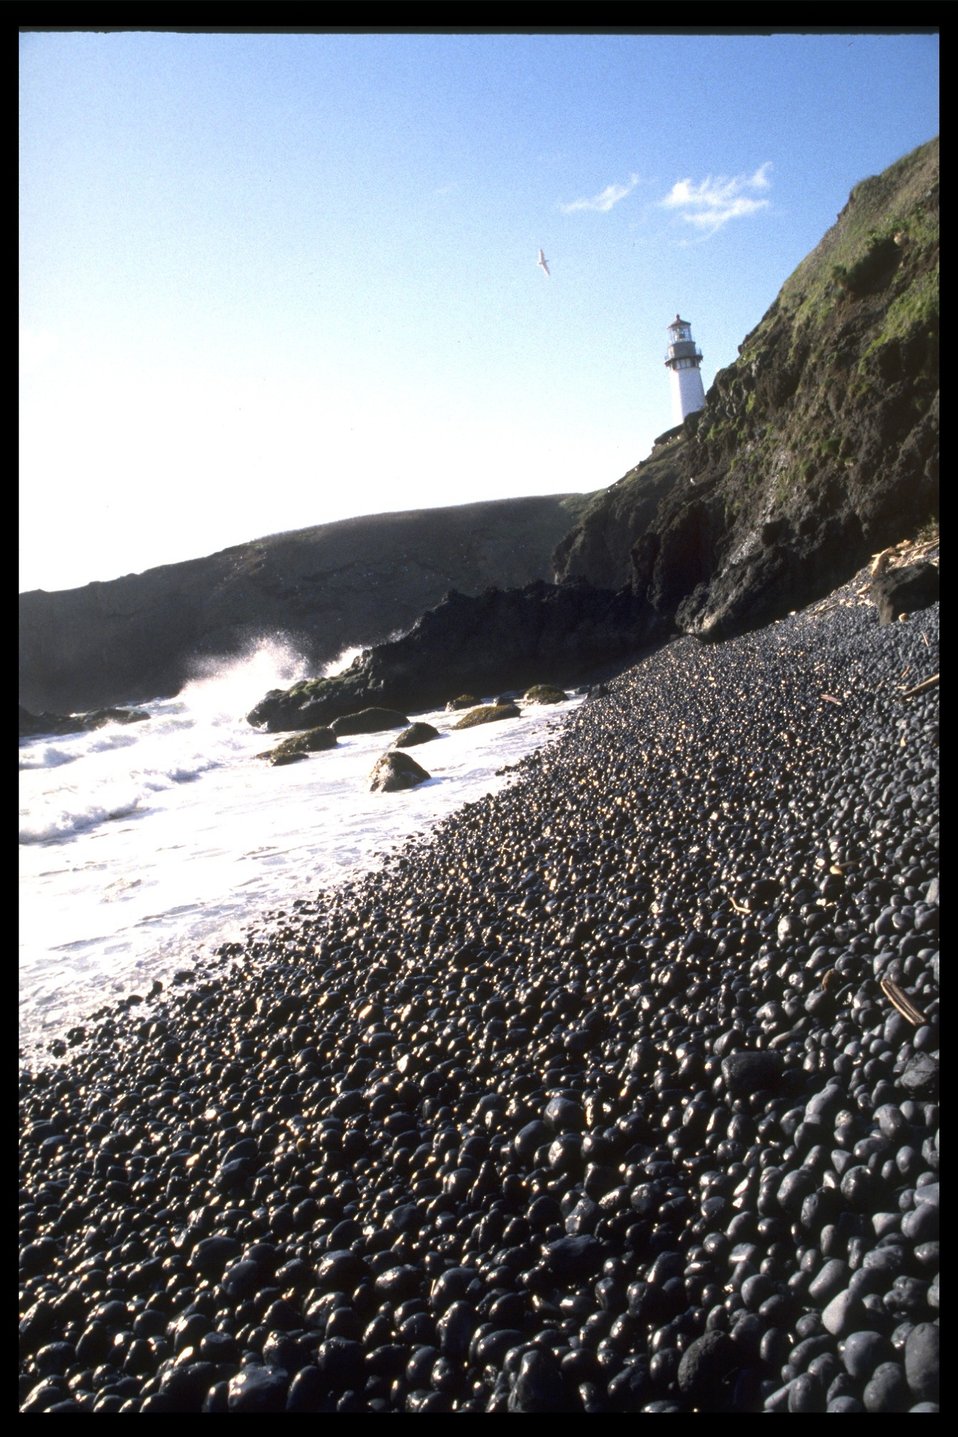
Yaquina Head Lighthouse.